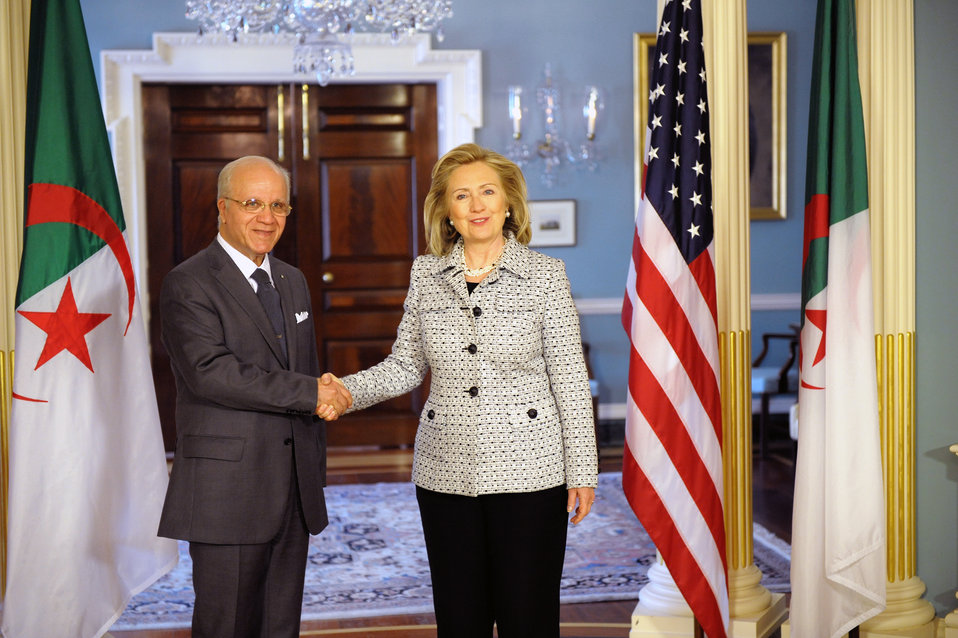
Secretary Clinton Shakes Hands With Algerian Foreign Minister Medelci

U.S. Secretary of State Hillary Rodham Clinton shakes hands with Algerian Foreign Minister Mourad Medelci after their bilateral meeting, at the U.S. Department of State in Washington, D.C., on May 3, 2011.